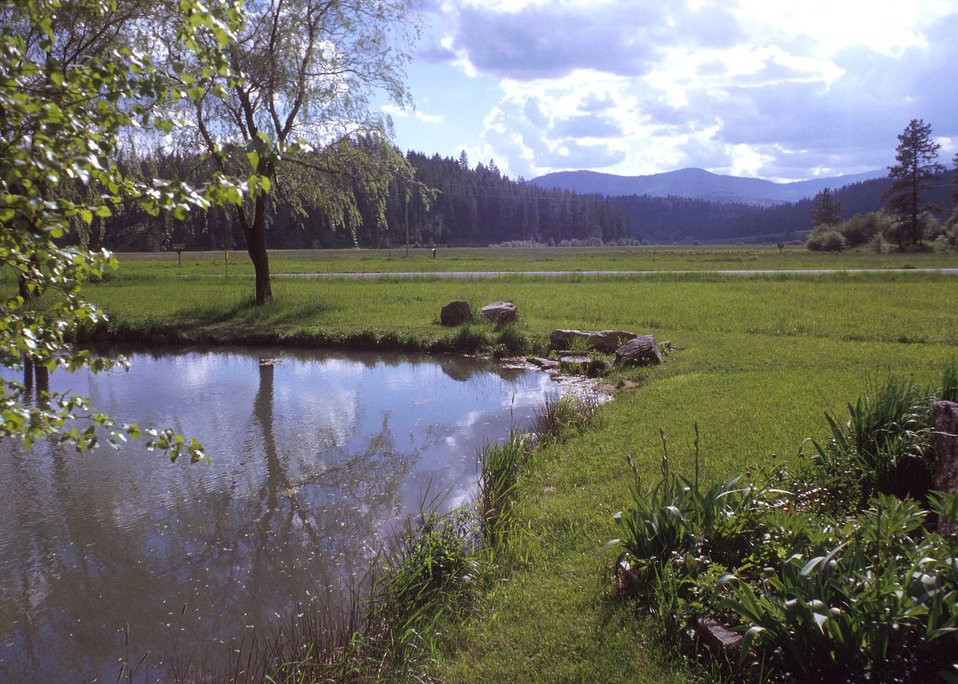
Farm pond landscape

Farm ponds provide many benefits including livestock water, gully control, fish and wildlife habitat.